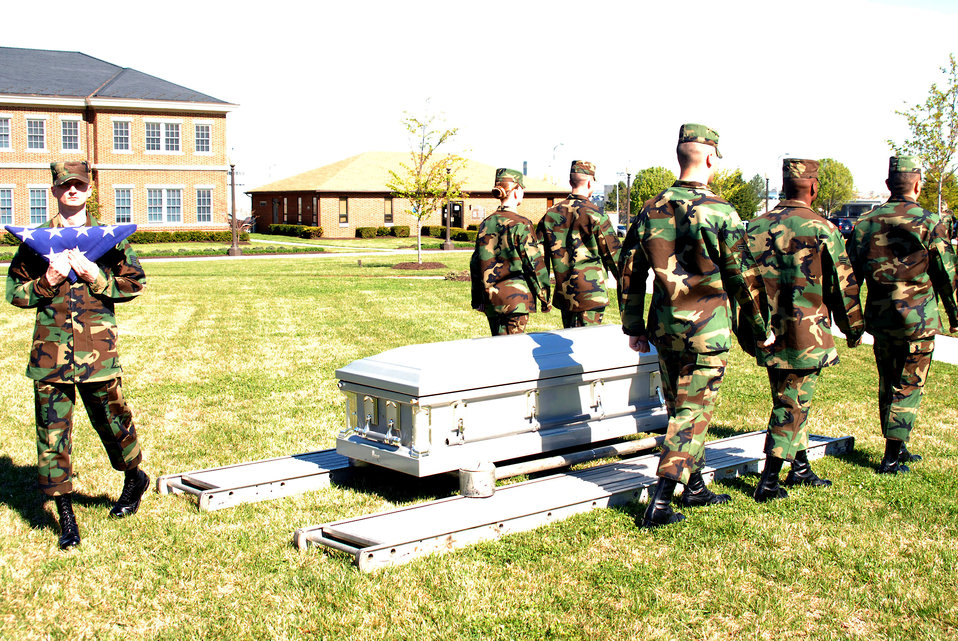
Retiree funerals change to 7-person sequence

Airmen from the United States Air Force Honor Guard at Bolling Air Force Base, D.C., practice the newly implemented 7-person retiree funeral sequence. The new sequence was implemented due to manpower shortages and a larger number of retiree funerals than ever before in Air Force history.